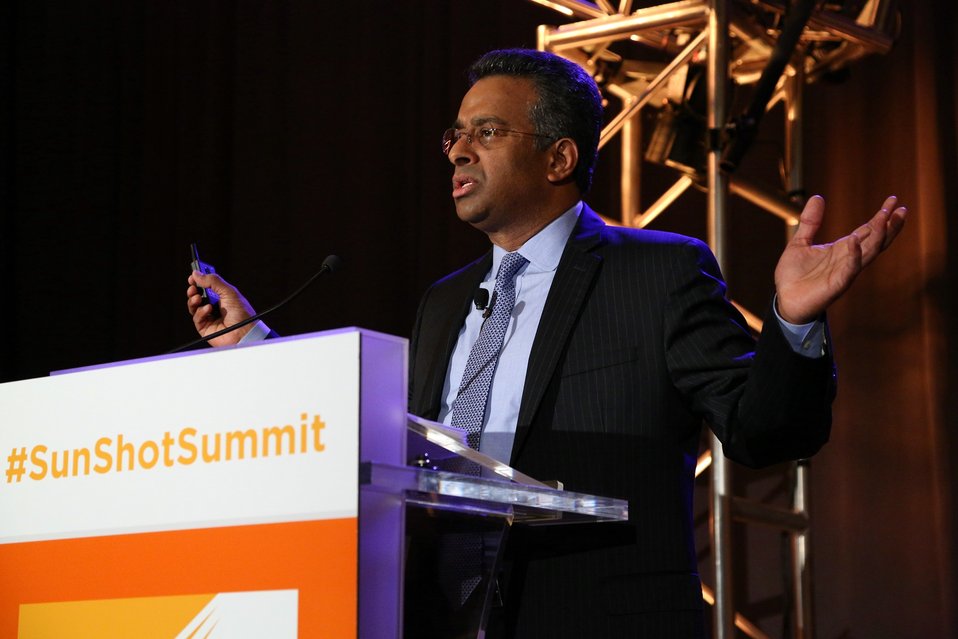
Day 2 Keynote Session 4

Dr. Ramesh, Deputy Director for Science and Technology for Oak Ridge National Laboratory provides a keynote address.